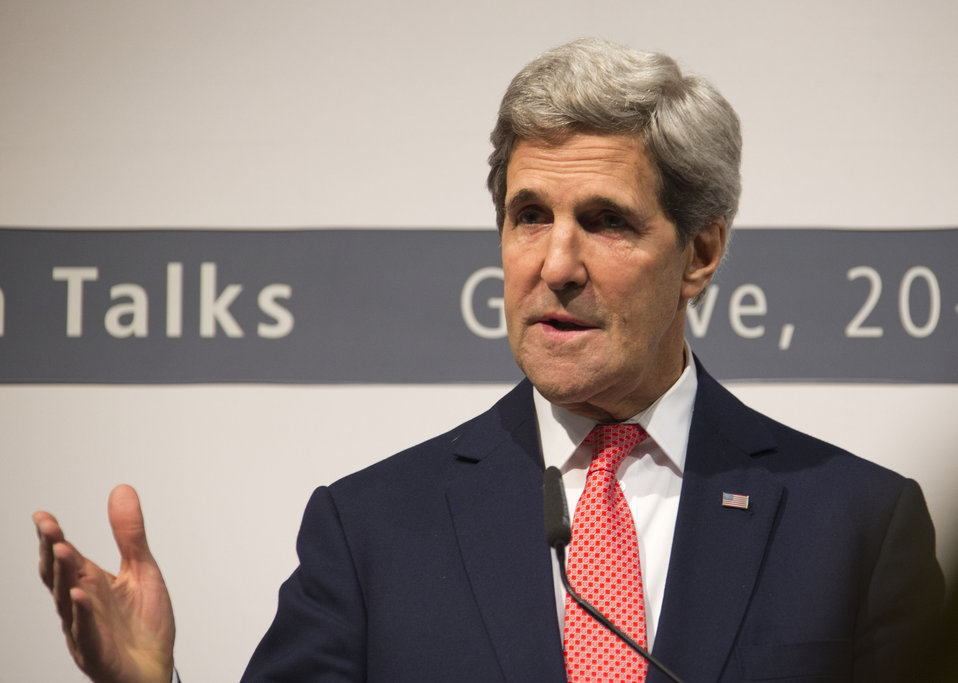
Secretary Kerry Speaks to the Media in Geneva, Switzerland

U.S. Secretary of State John Kerry addresses reporters and takes some of their questions during a news conference in Geneva, Switzerland, on November 24, 2013, after the P5 1 member nations concluded negotiations with Iran about its nuclear capabilities.